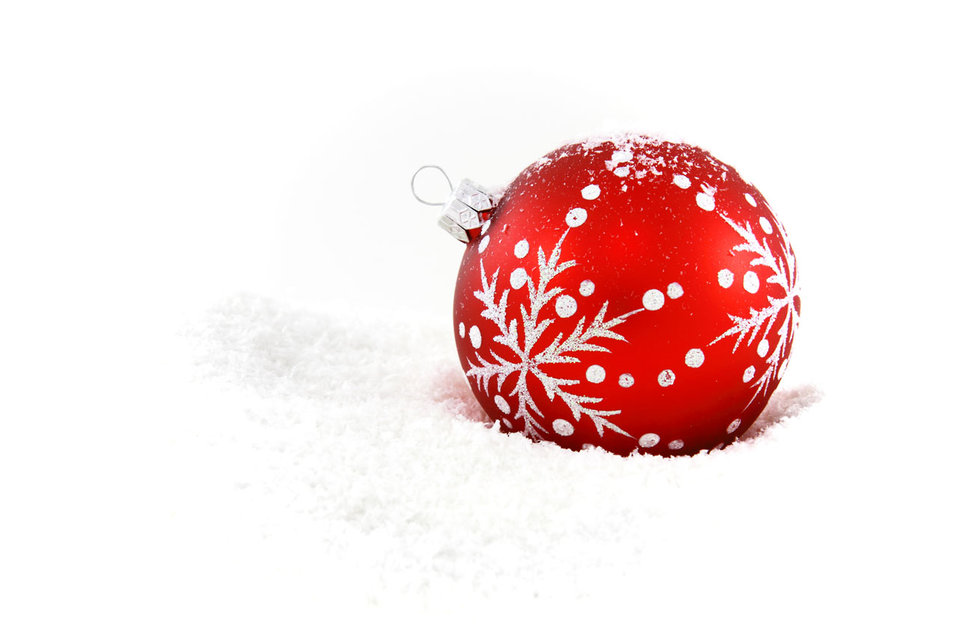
Bauble in snow

Red christmas bauble in snow.